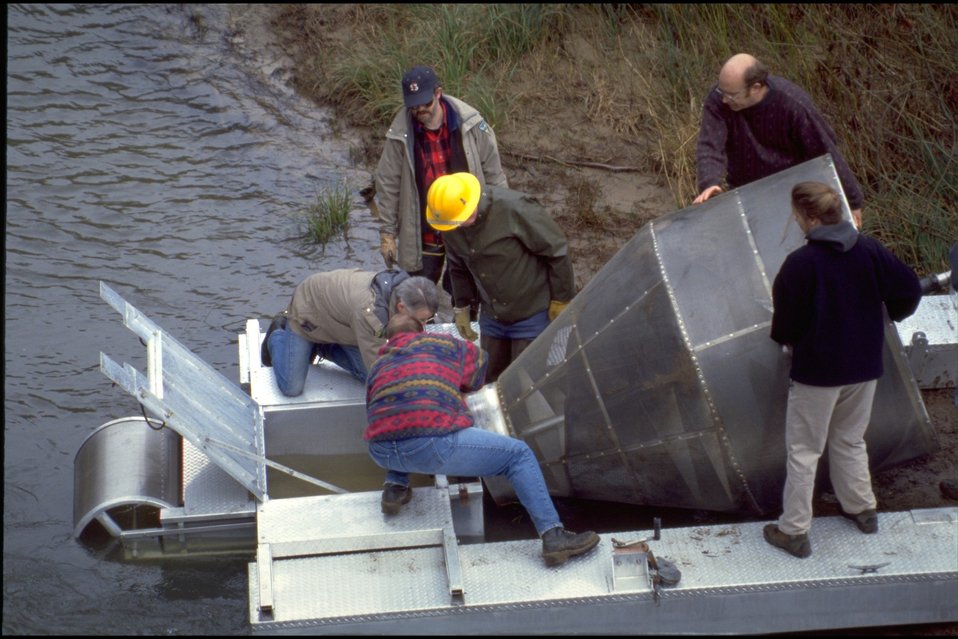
Installing fish trap on Wolf Creek.